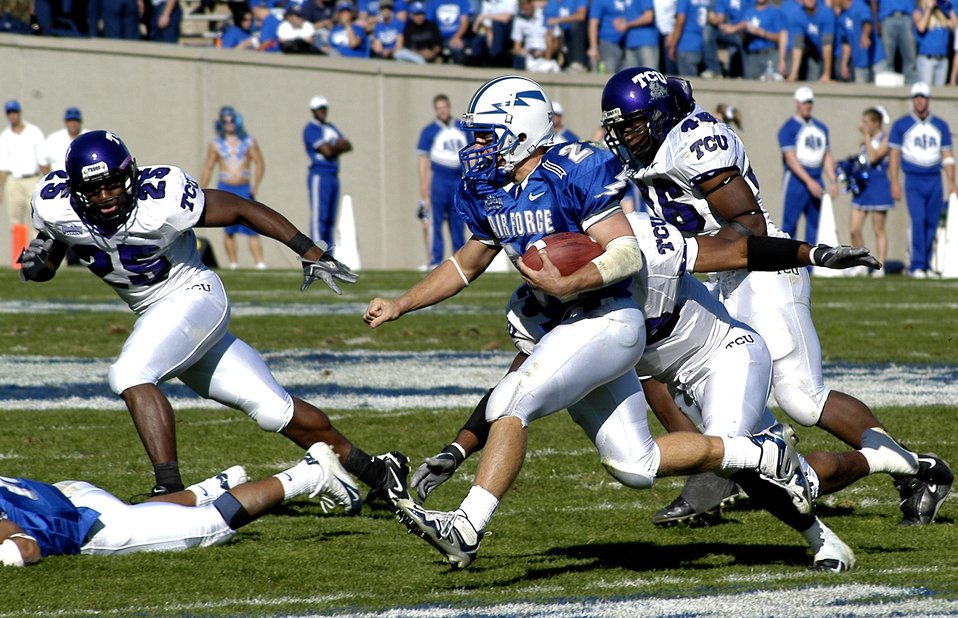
Falcons football

U.S. AIR FORCE ACADEMY, Colo. -- Sophomore halfback Chad Hall tries to swing wide to break out around the end. Hall carried five times for 21 yards as the Falcons lost to number 21 ranked Texas Christian University, 48-10,